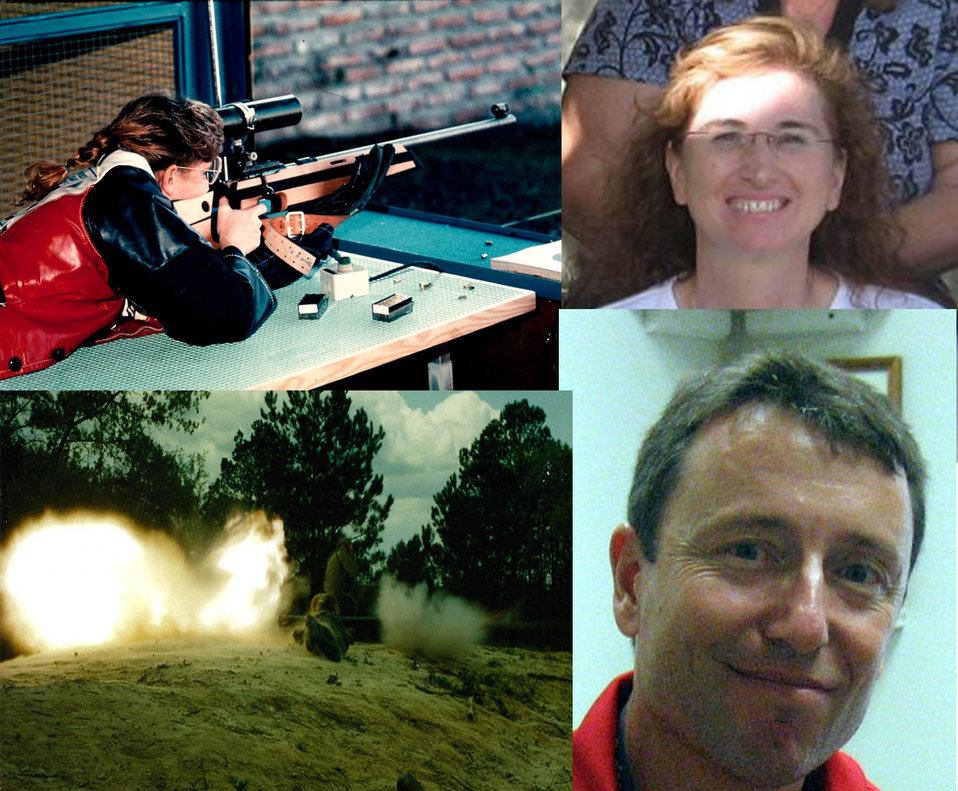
Chuck and LeeAnn Kelso

Then Army PFC Chuck Kelso (bottom left) crawls at Fort Benning's Galloway Range during a live-fire exercise in 1987. The weapon he's firing is an M-67 recoilless rifle firing a HEAT (High Explosive Anti Tank) round. Upper left: U.S. Army Specialist 4 LeeAnn Kelso competes in an international marksmanship competition in 1988.
Husband and wife Chuck and LeeAnn Kelso, of the South Florida Ecological Services Office, are veterans of the U.S. Army..They met in 1988 at Ft. Benning, Ga. while on active duty.
Chuck, a fish and wildlife biologist , served as an Army Ranger from 1986-1989. From there, he was a drop zone/helicopter landing zone safety officer with the 187th Regimental Combat Team’s Pathfinder Detachment and later served as an instructor at the newly-formed U.S. Army Sniper School.”
LeeAnn, an office automation specialist, was an administrative specialist in the Army and also great with a rifle. She enjoyed an assignment with the Army Marksmanship Unit and competed in various national and international competitions..
There is a rich history of military service on both sides of their family. In addition to Chuck and LeeAnn, 11 of their family members have served or continue to serve in America’s Armed Forces..
It all started with my Chuck's great-great-great uncle who fought in the Civil War and died at Camp Sumter, also called Andersonville Prison. Lee Ann's father served as an MP at West Point. Her brother did a hitch in the Marines and then in the Army. Both of his son's served in Southwest Asia. One is still an Army MP. Both Chuck’s father and uncle flew over Germany in World War II. Chuck’s cousin, son of the uncle mentioned above, is retired from the Army. Chuck’s brother is retired Navy. His oldest son retired from the Air Force and his youngest retired from the Navy.